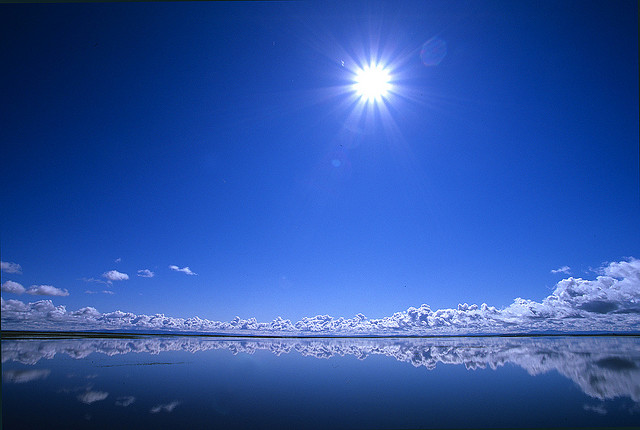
blue and white

Malheur National Wildlife Refuge